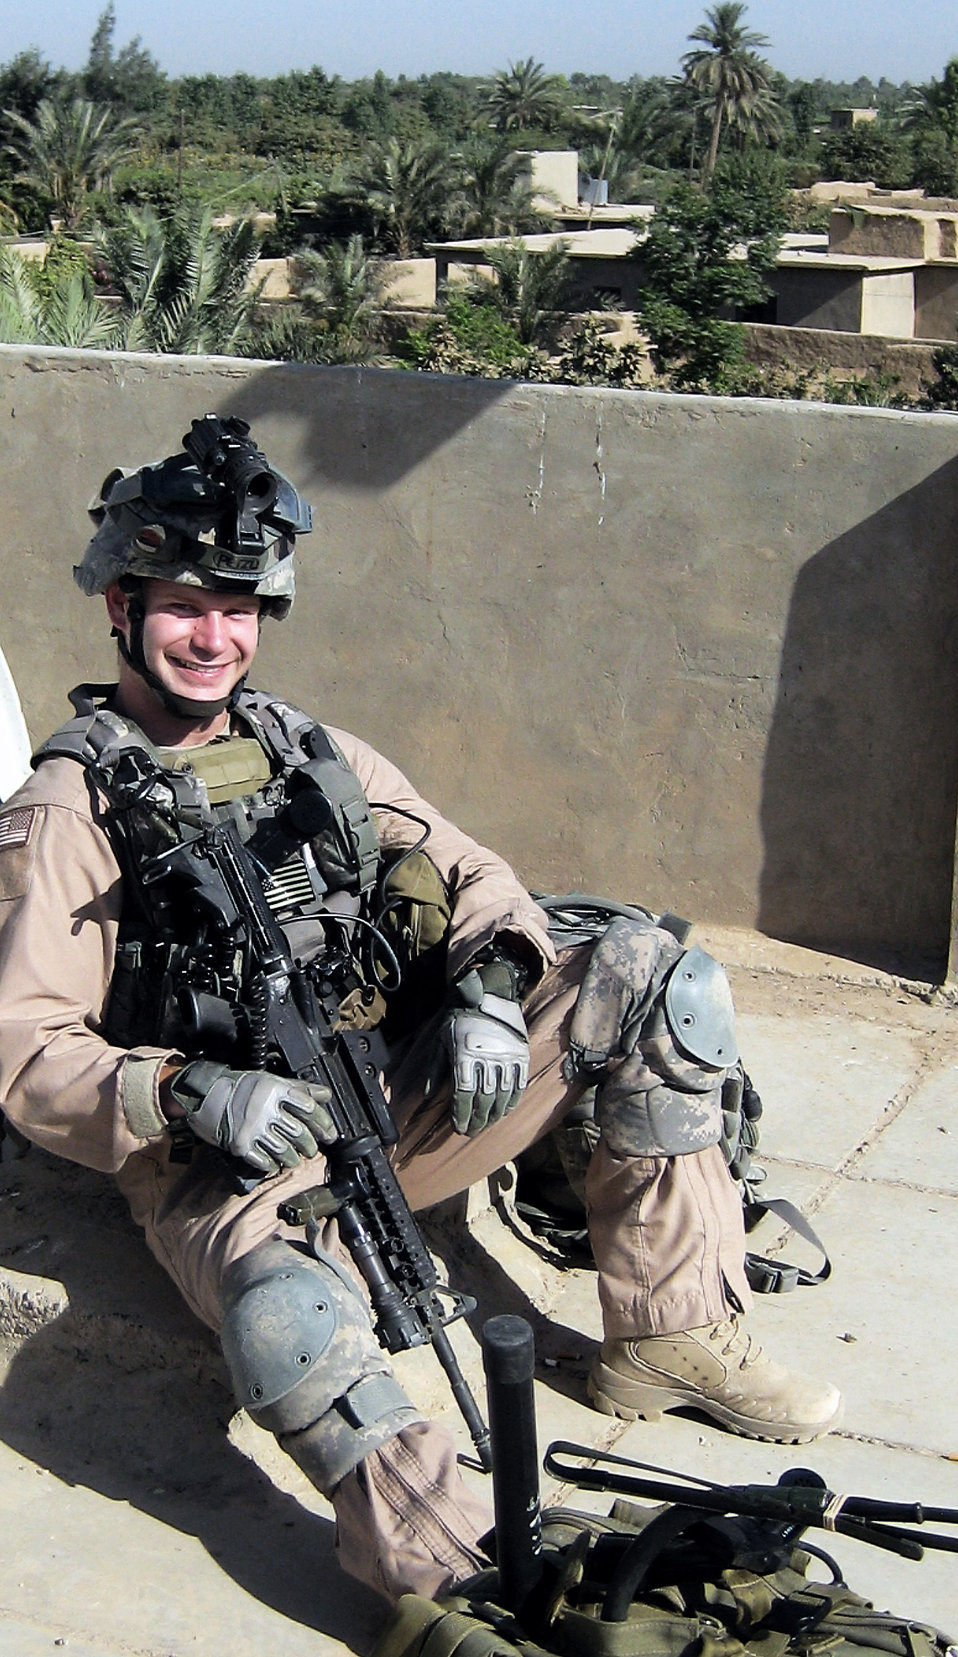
Airman provides direct air support for Army battlespace

Senior Airman Andrew Young takes a break after coordinating air surveillance with an F-16 Fighting Falcon in June at Albu Ghrar, Iraq. Officials from the 2nd Battalion, 320th Field Artillery Regiment, captured three suspected terrorists while searching for a high-value individual in the village that day. Airman Young, a joint terminal attack controller embedded with the 2-320th, coordinates close-air-support missions daily to protect Soldiers and Airmen working in and around Joint Base Balad, Iraq. He is a native of State College, Pa., and is deployed to the 1st Expeditionary Air Support Operations Squadron from Fort Hood, Texas.